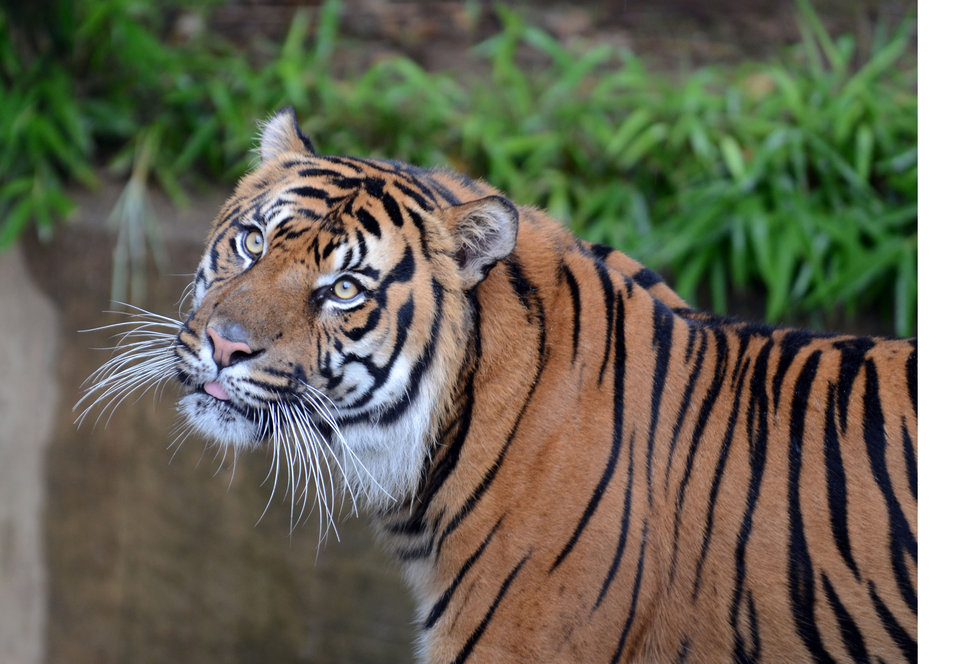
NZP Tiger Stamp 0180